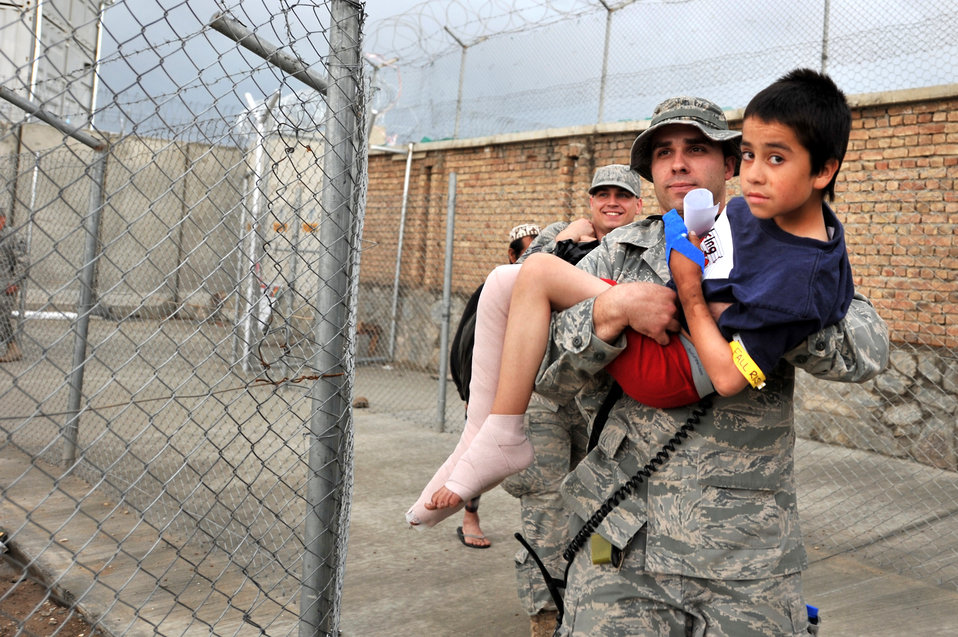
A helping hand

Staff Sgt. Billy Atherton carries an Afghan child to a field hospital at Bagram Airfield, Afghanistan, May 5, 2011. Sergeant Atherton is assigned to the 455th Expeditionary Medical Operations Squadron.